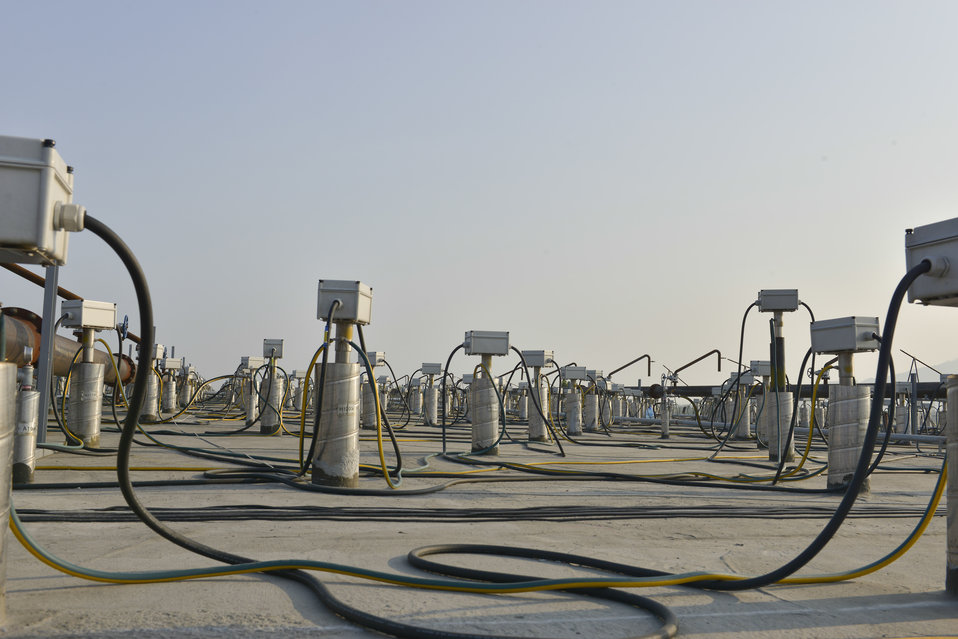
The containment and treatment structure at the Danang Airport Project site.

Heating elements have been installed into the heater wells that are drilled throughout the containment structure, and power cables have been installed to connect the treatment system to the electrical substations adjacent to the containment structure.

March 24, 2014.